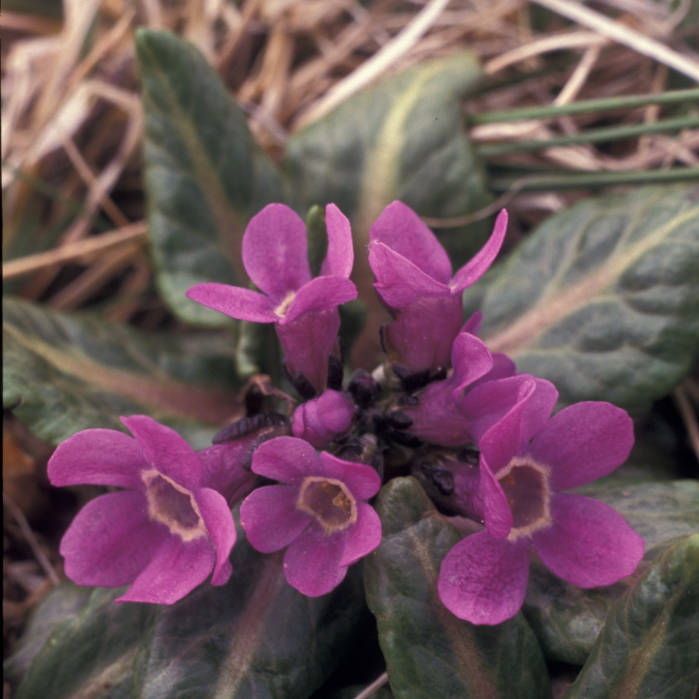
primula

Alaska Maritime National Wildlife Refuge